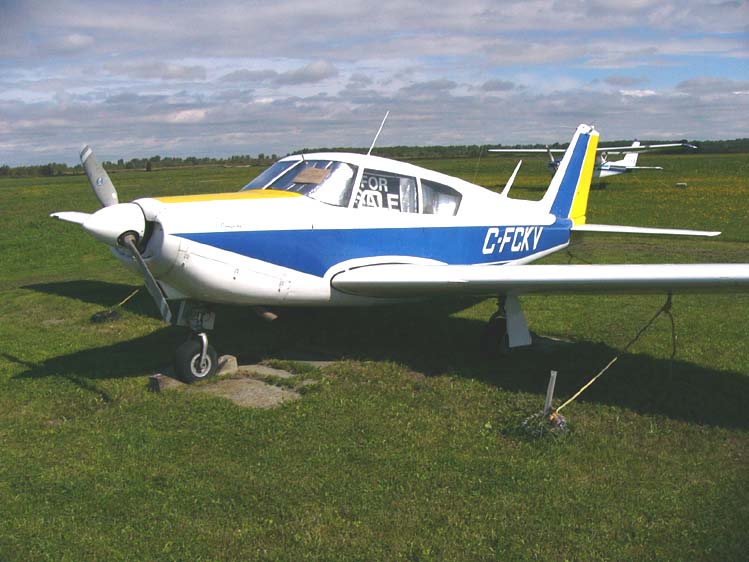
Photo taken by Adam Hunt 2004 - released to public domain